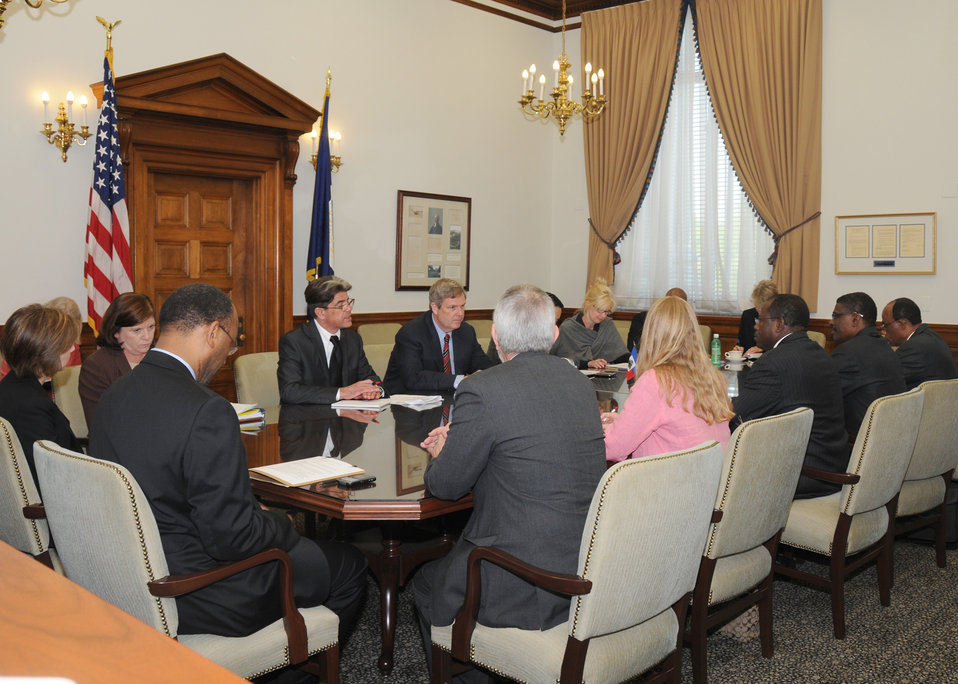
Agriculture Secretary Tom Vilsack meets with Haitian Agricultural Minister Joanas Guèx on Thursday, April 15, 2010. USDA Photo 10di1313-11